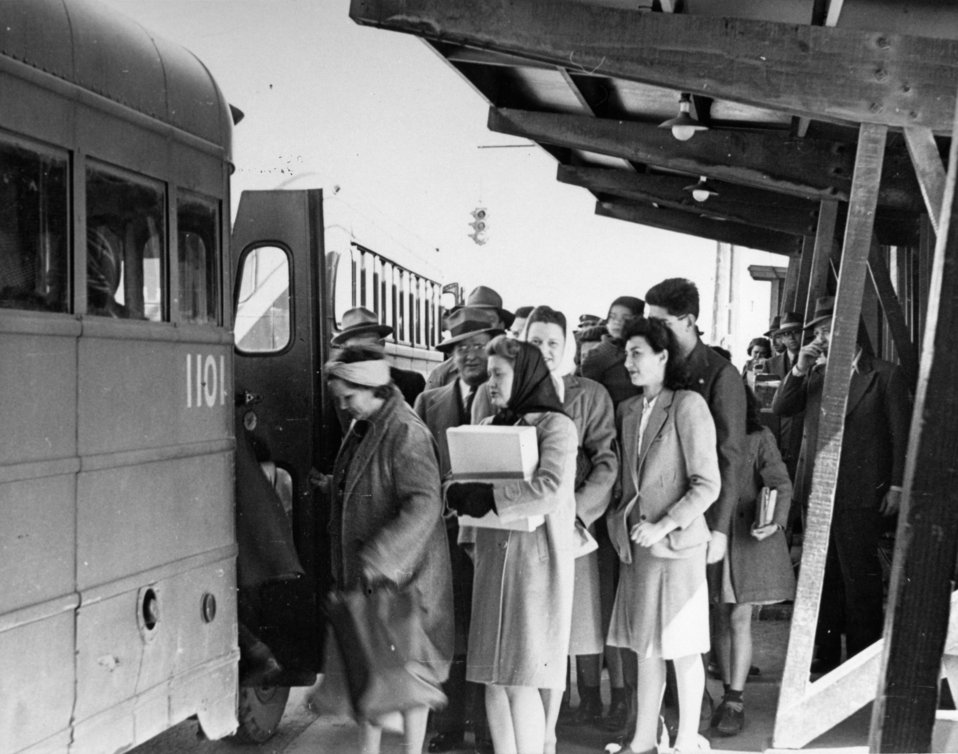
Daily Life at Oak Ridge